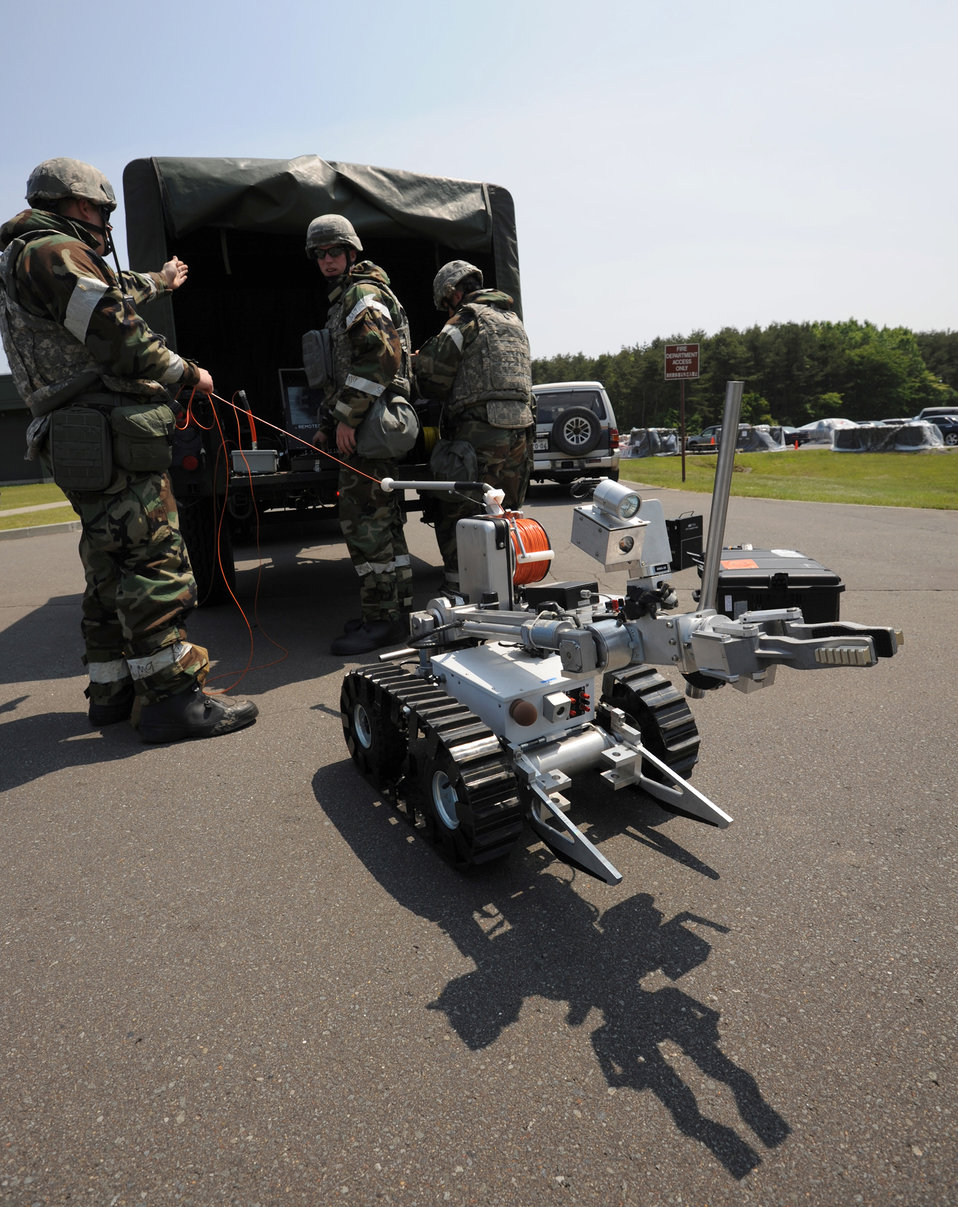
Simulated attack training exercise

Members of the 35th Civil Engineer Squadron explosive ordnance disposal team respond to a report of a